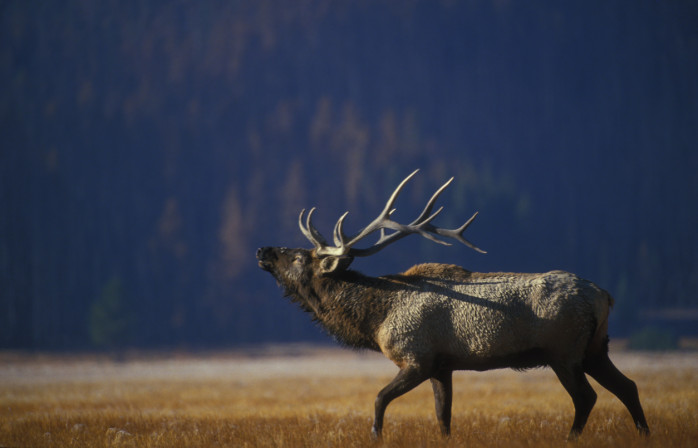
bull elk bugling